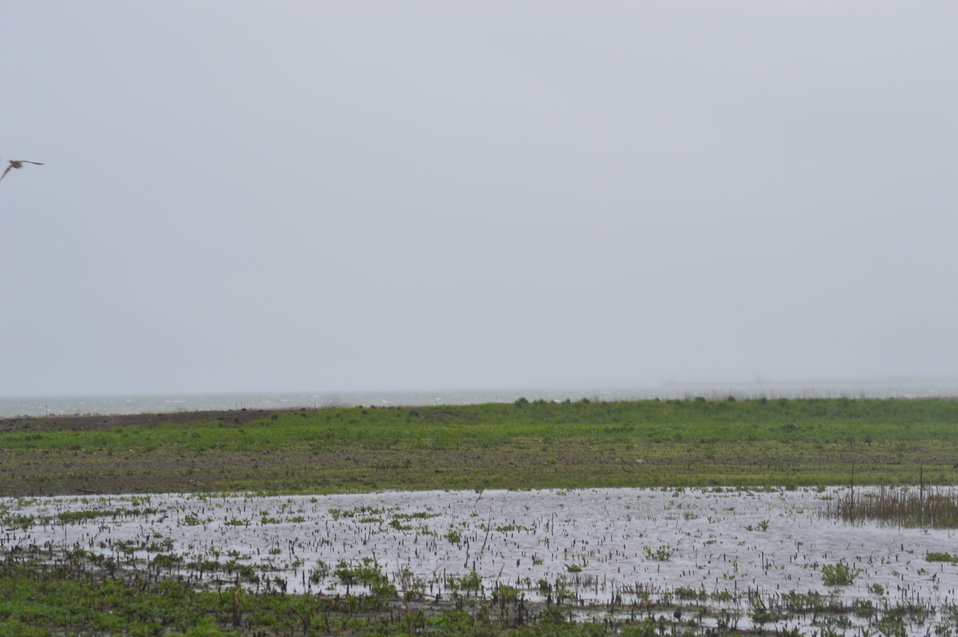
Wetlands

Scenery and wildlife and Audubon National Wildlife Refuge in North Dakota.